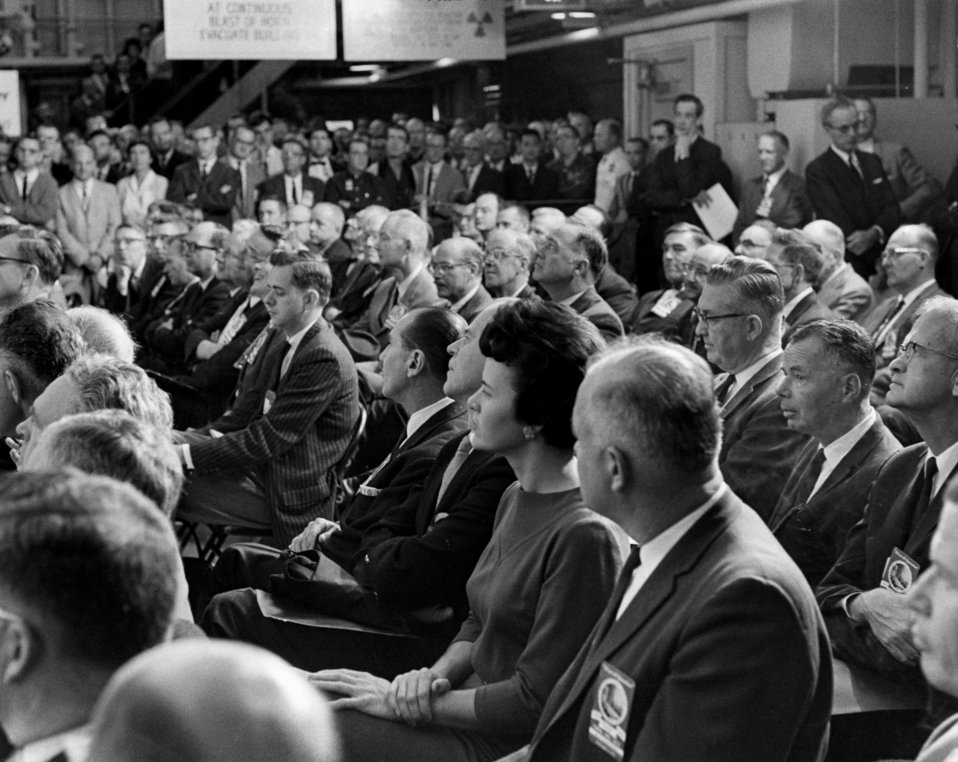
Graphite Reactor Closing Ceremony Oak Ridge

63-1229-18 DOE photo Ed Westcott 11-4-1963 ORNL Oak Ridge Tennessee